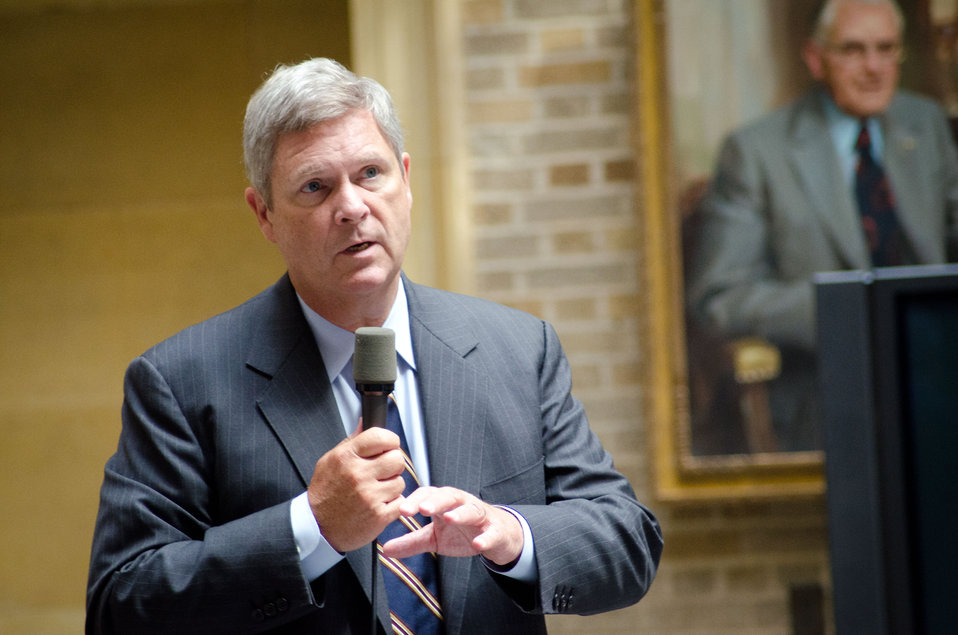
Agriculture Secretary Tom Vilsack speaks with the National Future Farmers of America (FFA) leadership at the U.S. Department of Agriculture Patio in Washington, DC, on Thursday, Juyly 28, 2011.